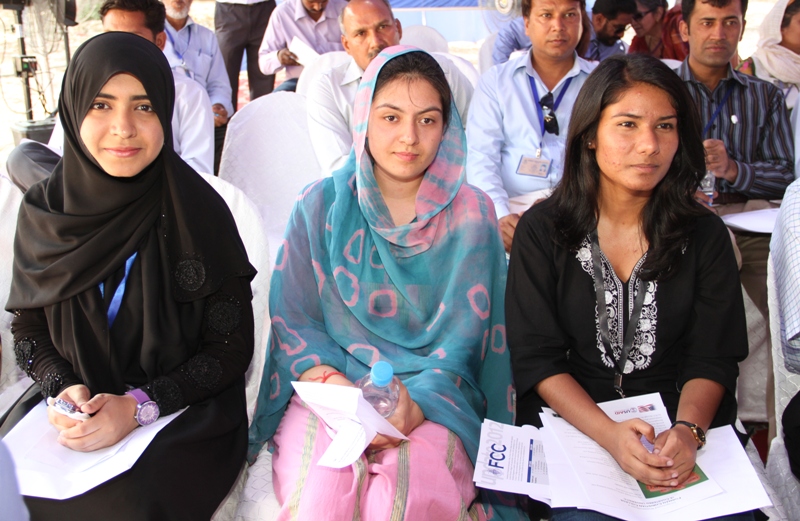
Female students at the groundbreaking ceremony.